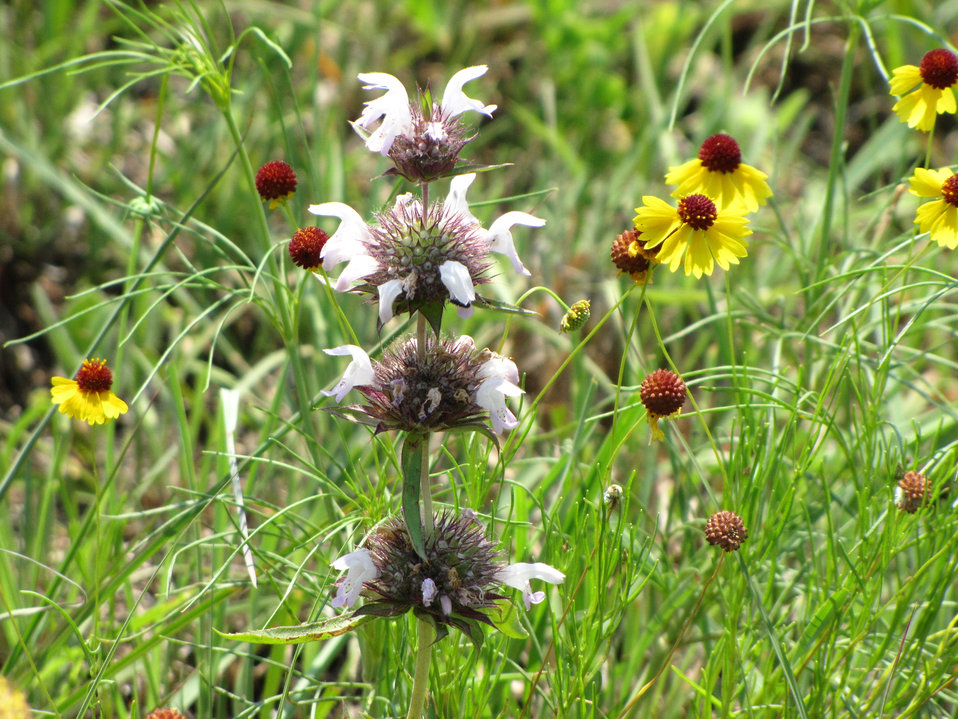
Monarda sp.

Wildflowers at Wichita Mountains Wildlife Refuge in Oklahoma.